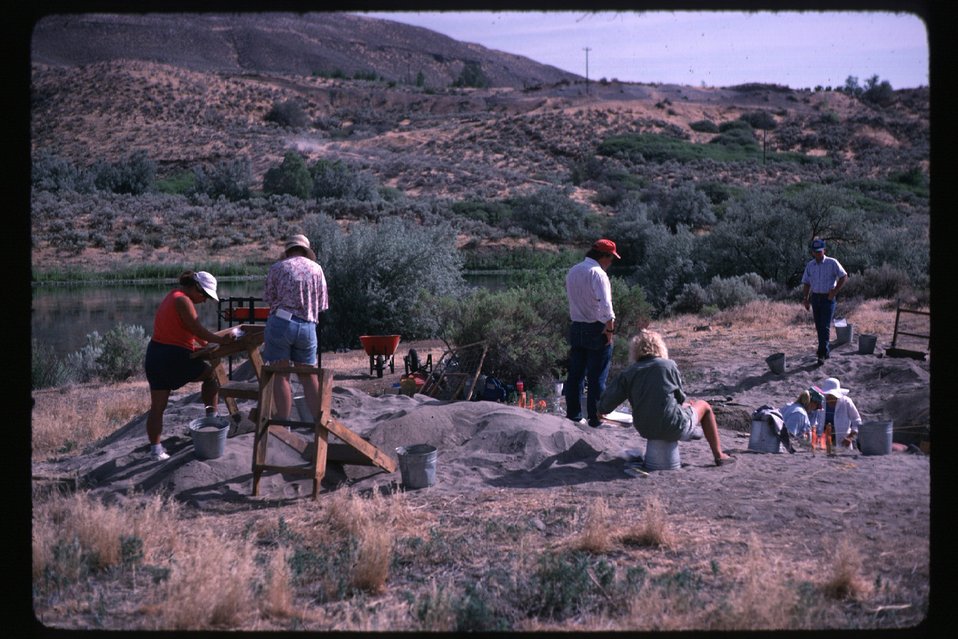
Archeology Site near Givens Hot Springs along Snake River Owyhee Field Office LSRD Lower Snake River District